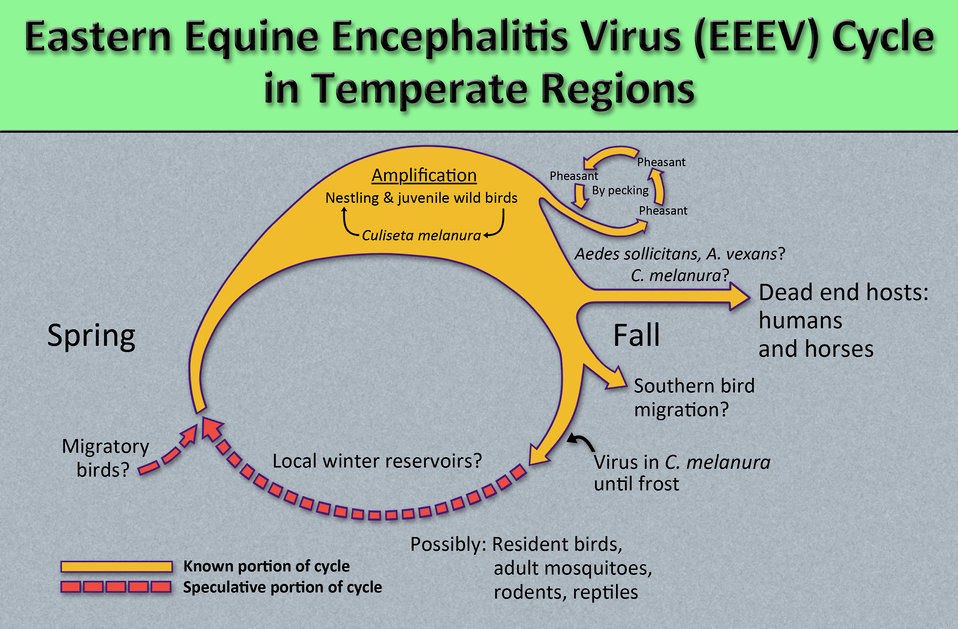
This diagram illustrates the methods by which the arbovirus Eastern equine encephalitis virus (EEEV) reproduces and amplifies itself in avian populations within temperate regions, and is subsequently transmitted to human beings and horses, as the dead end hosts through the bite of a number of differnt mosquito species. See PHIL 15000, for a variation of this cycle, which includes the possible use of equines as a mosquito food source, which acts to transmit the virus from horse to horse through the bites of feeding mosquitoes, rather than the sole equine dead end host model, which is shown in here.